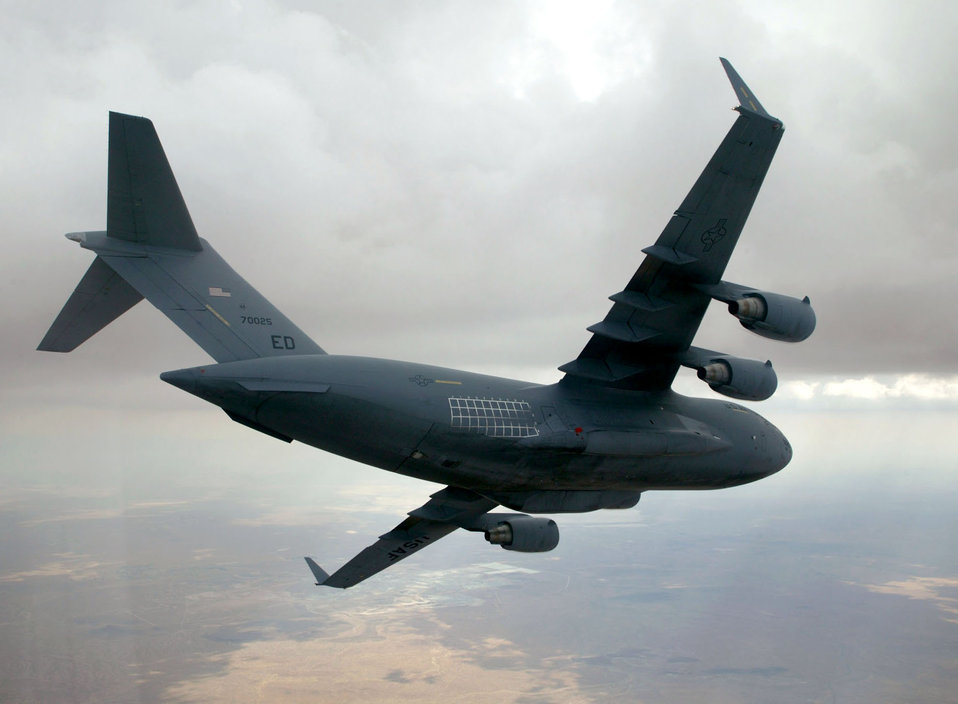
C-17 Globemaster banks

FILE PHOTO -- The C-17 Globemaster III is the newest, most flexible cargo aircraft to enter the airlift force. The C-17 is capable of rapid strategic delivery of troops and all types of cargo to main operating bases or directly to forward bases in the deployment area. The aircraft is also capable of performing tactical airlift and airdrop missions when required. The inherent flexibility and performance of the C-17 force improve the ability of the total airlift system to fulfill the worldwide air mobility requirements of the United States.